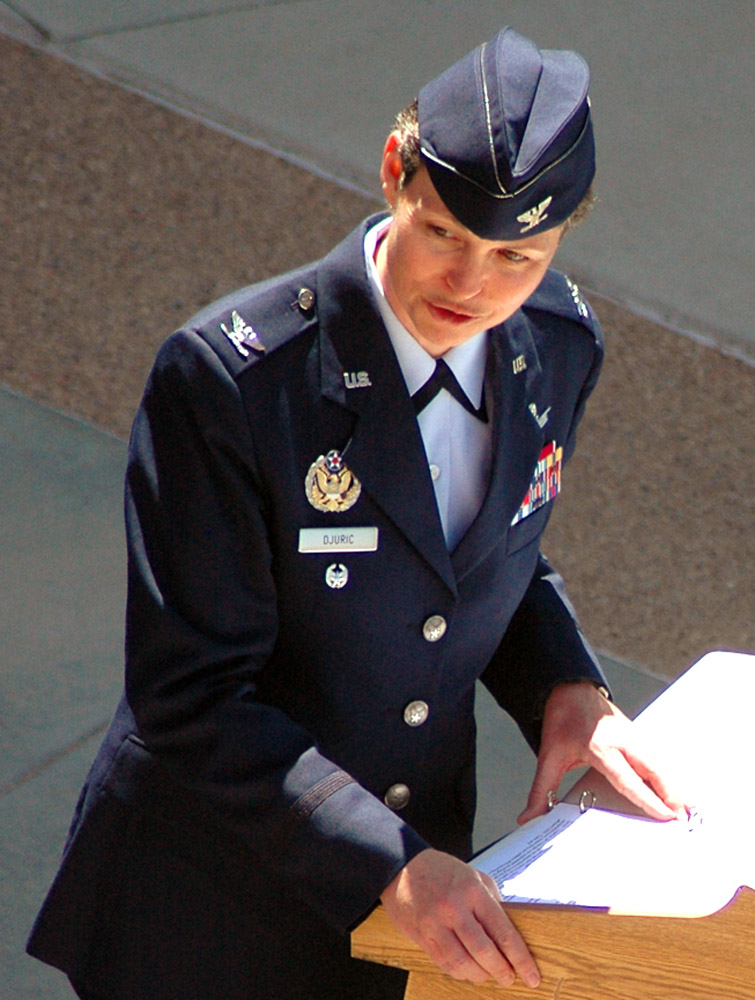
50th Space Wing welcomes new commander

Col. Teresa Djuric addresses the audience after taking command of the 50th Space Wing during a ceremony May 22. Colonel Djuric succeeded Col. John Hyten as 50th SW commander.